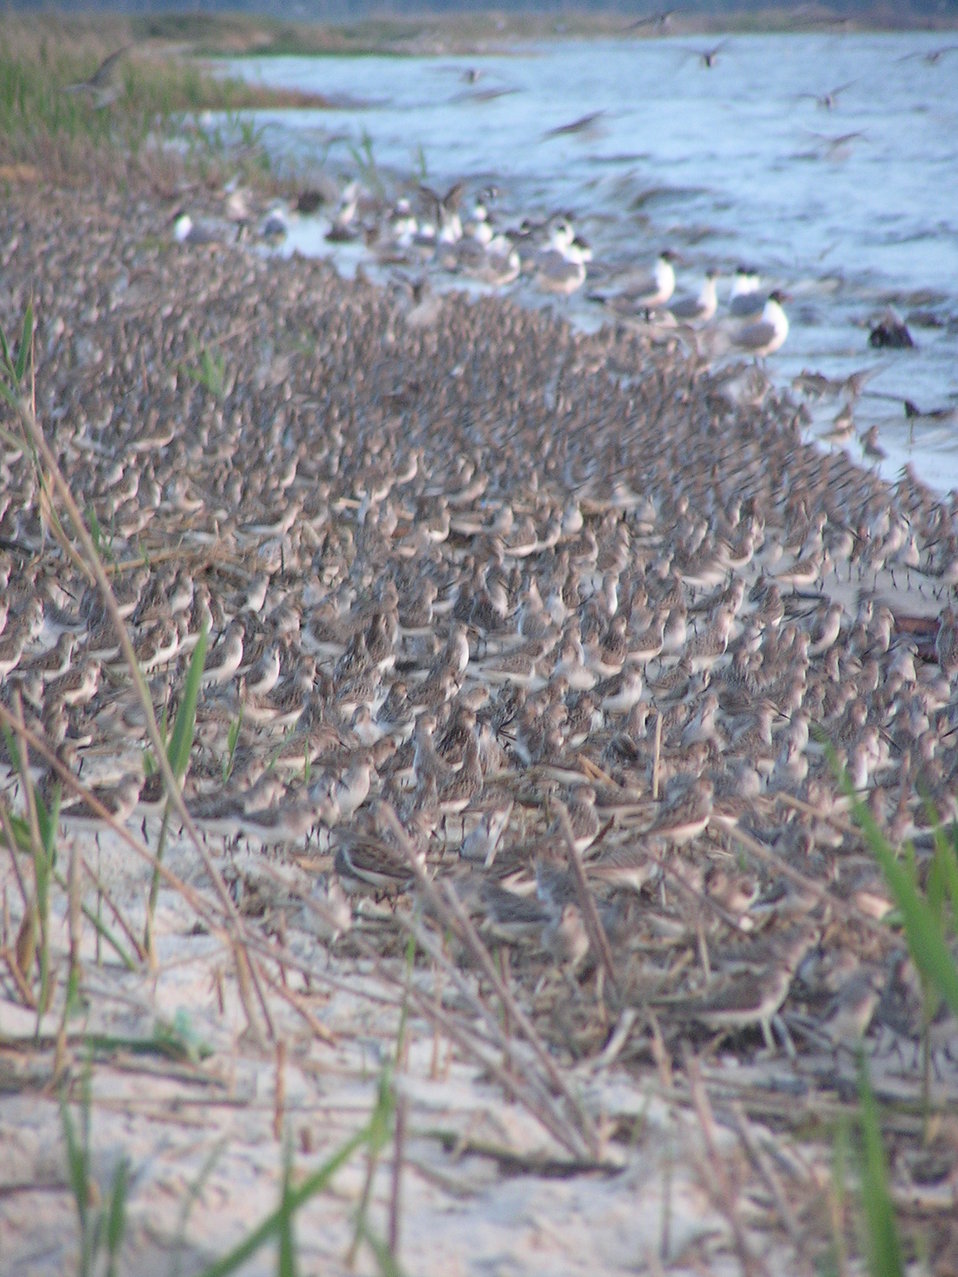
Shorebirds at Cape May National Wildlife Refuge.